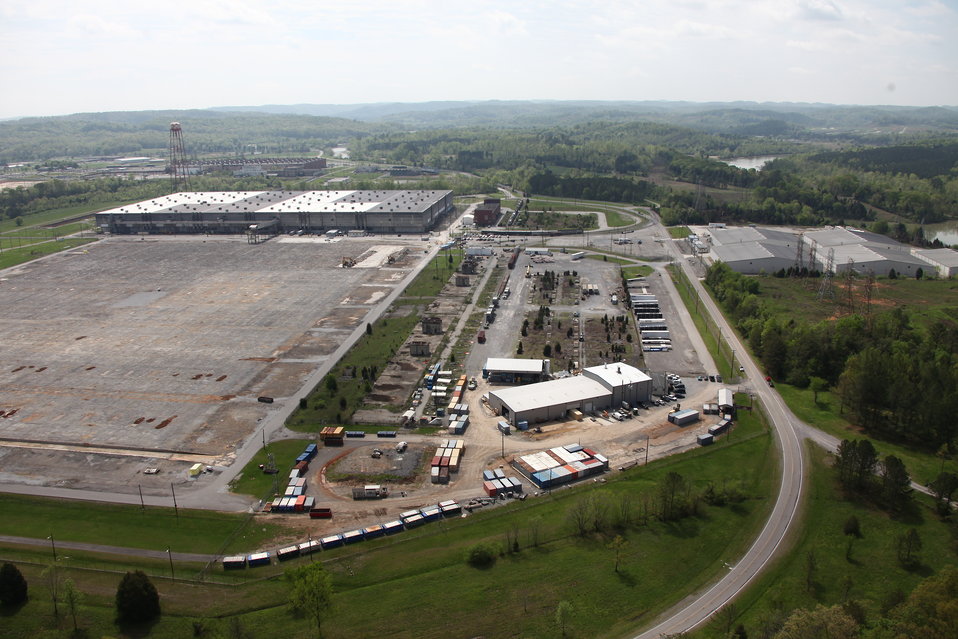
ETTP